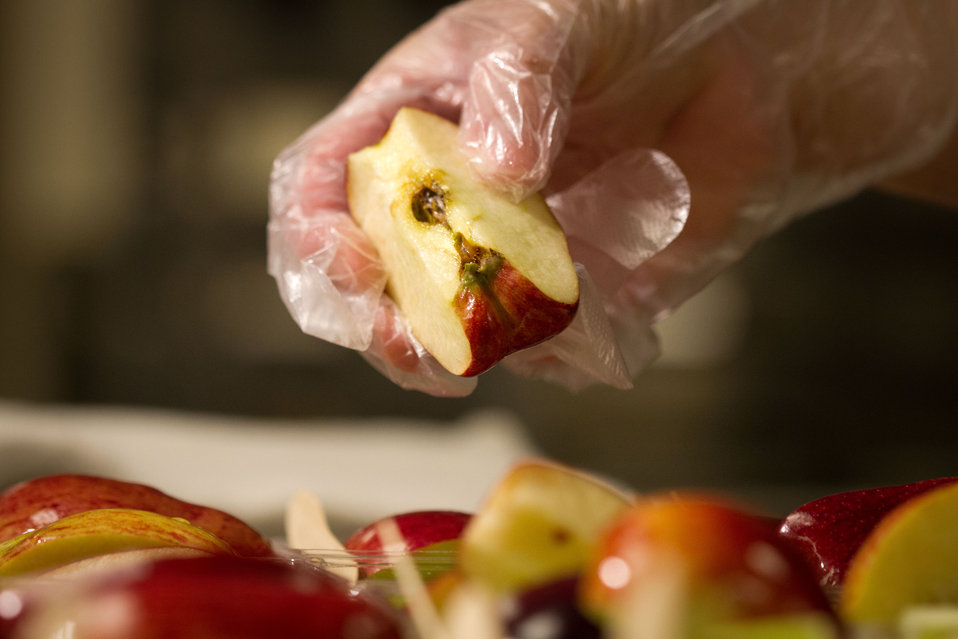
Apple slices are added to sampler trays of apples celery with sunbutter dip for more than 50 students from the 5th grade classes at Yorkshire Elementary School in Manassas, VA., participated in a taste testing of the new school lunch menu created to meet the new standards. Students tested a sample menu of black-bean filled pizza, pineapple spear, plantain, sunny broccoli and cauliflower toss, and an apple and celery cup with sunbutter dip (a peanut butter substitution), on Wednesday, September 5, 2012.